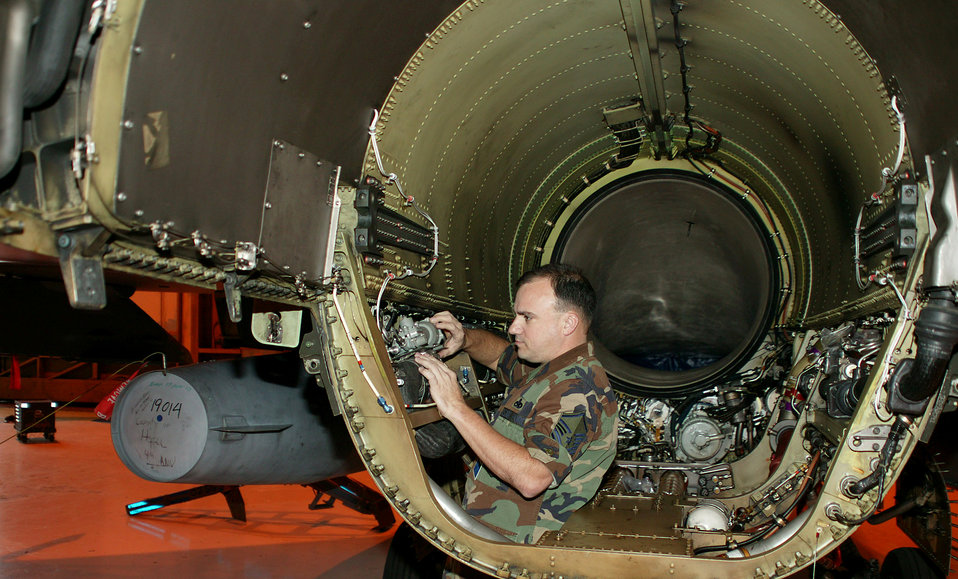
Shaw NCO awarded $10K for idea

Master Sgt. Scott Laws inspects a shut-off valve on an F-16 Fighting Falcon. Sergeant Laws made a suggestion that could save the Air Force $320,000 a year by replacing the valve's heat shield instead of the entire valve assembly. Sergeant Laws is the assistant electrical environmental section chief with the 20th Component Maintenance Squadron.